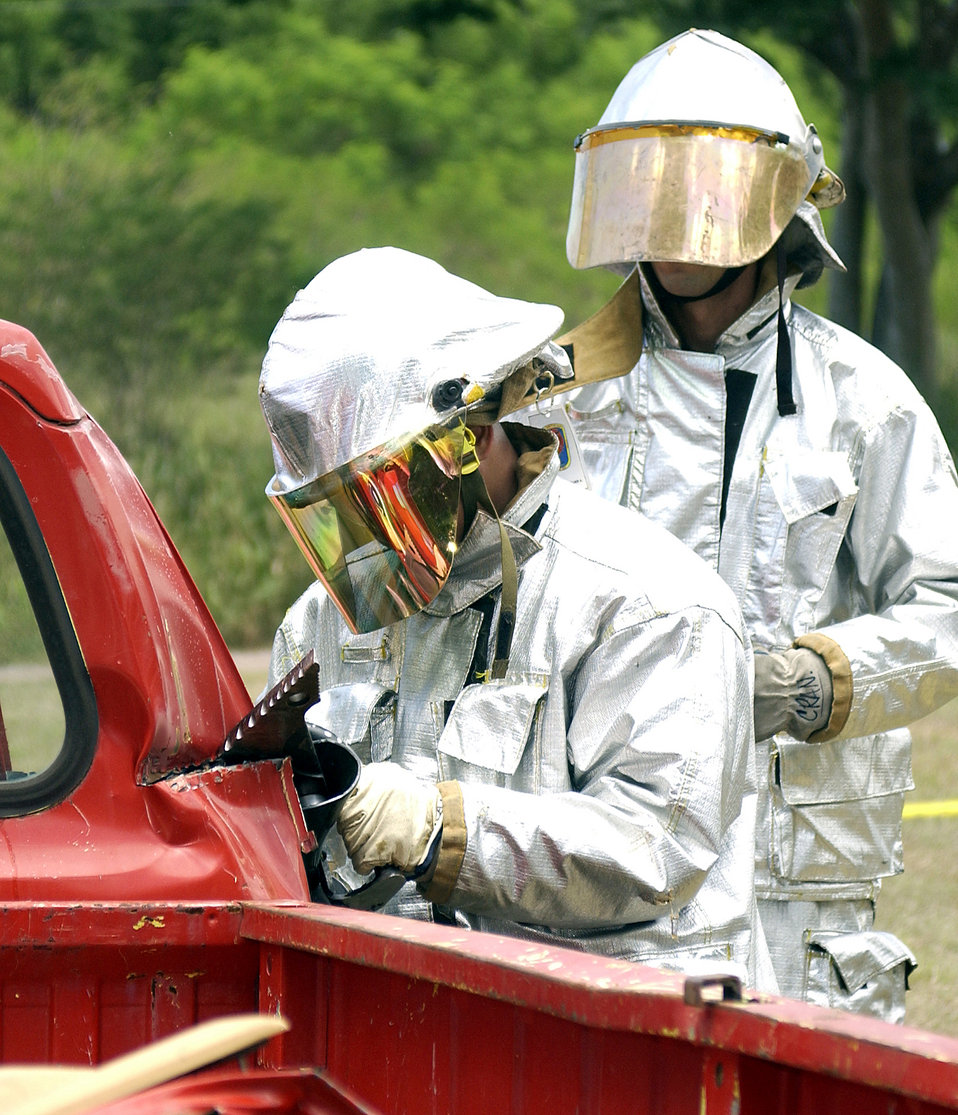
Saving lives

SOTO CANO AIR BASE, Honduras -- U.S. Air Force firefighters learn proper techniques to remove victims from an automobile accident here Sept. 18. The Air Force firefighters are part of Joint Task Force Bravo, a 500-person Air Force and Army task force deployed to Honduras. JTF-Bravo has a multifaceted mission of conducting humanitarian and civic assistance, airborne search and rescue missions, and illegal drug interdiction support for the Central American region.